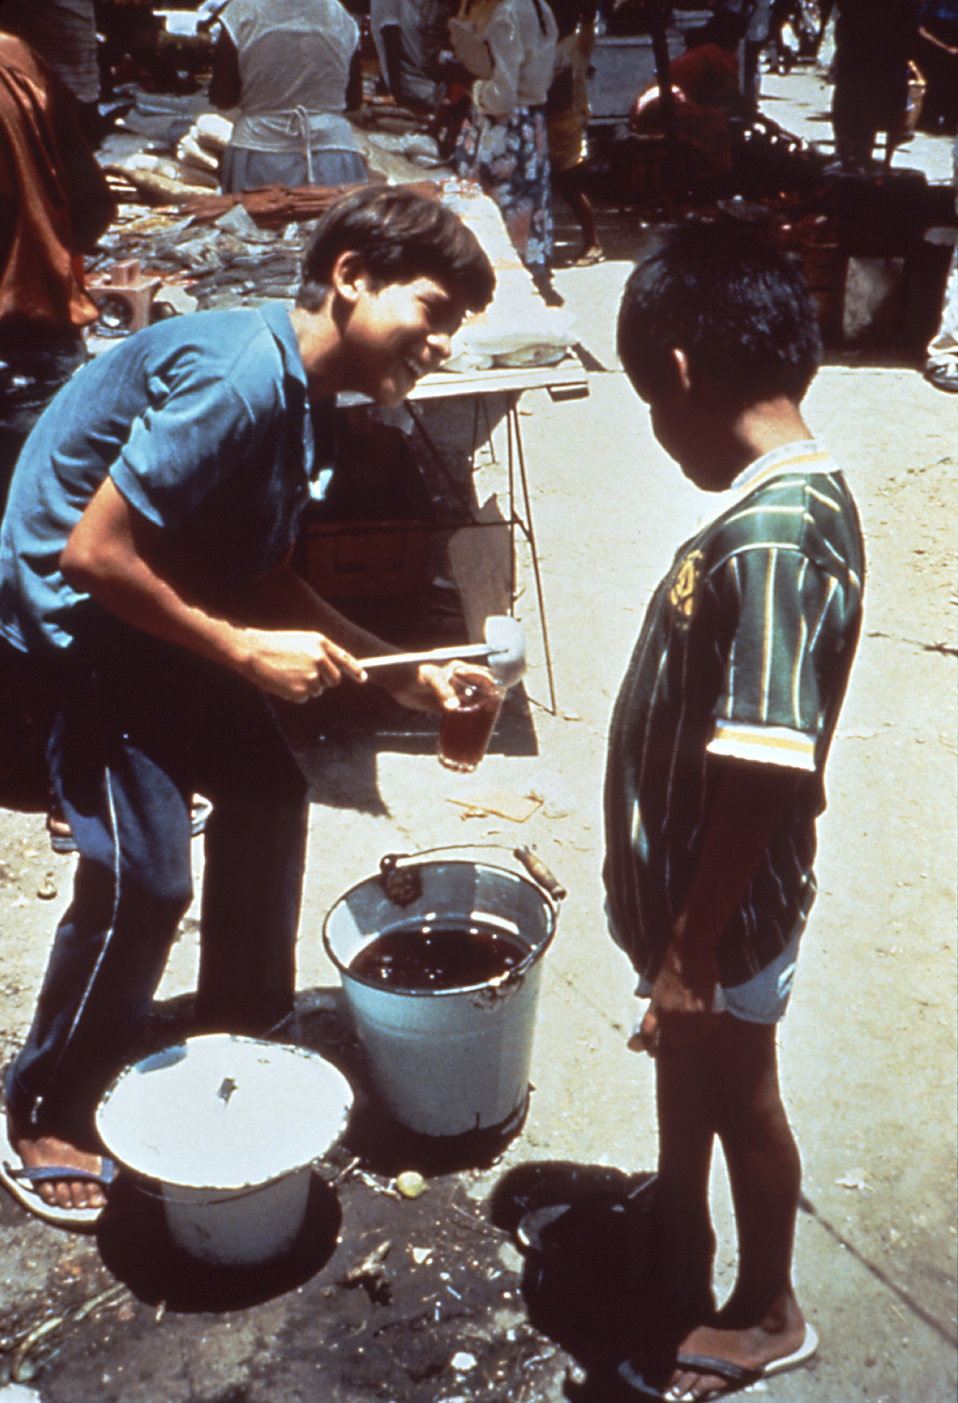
Here, a Peruvian street vendor is selling a corn-based drink he made at home using a single glass that he fills with a dipper.